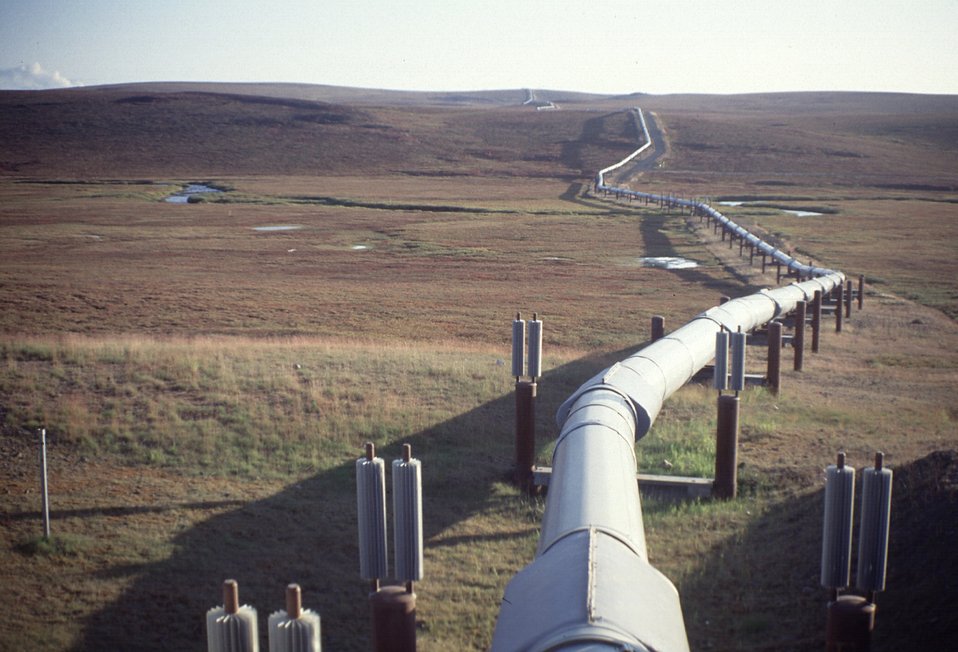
Trans-Alaska Pipeline, Dalton Highway